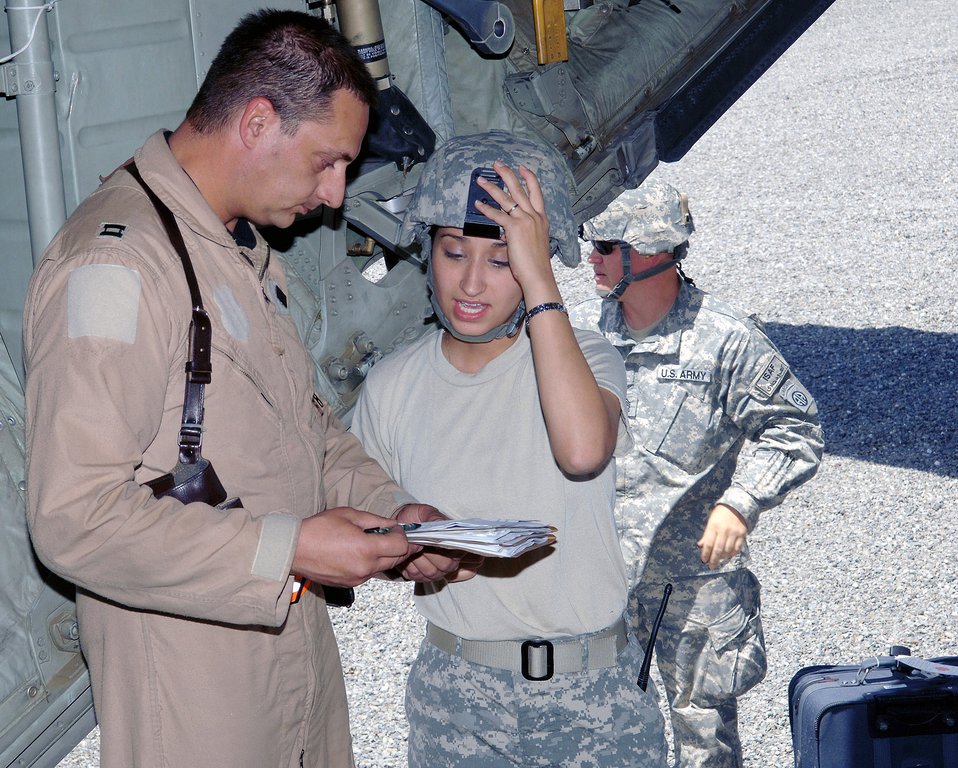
Saving servicemembers' lives one flight at a time

Capt. Chris Capozollo discusses the patient manifest with Army Specialist Renee Castillo June 5 at Forward Operating Base Salerno, Afghanistan, prior to transporting wounded servicemembers to Bagram Air Base, Afghanistan. Captain Capozollo is chief nurse with the 455th Expeditionary Aeromedical Evacuation Flight and is deployed from the Wyoming Air National Guard's 153rd Airlift Wing. Specialist Castillo is with the 396th Combat Support Hospital.